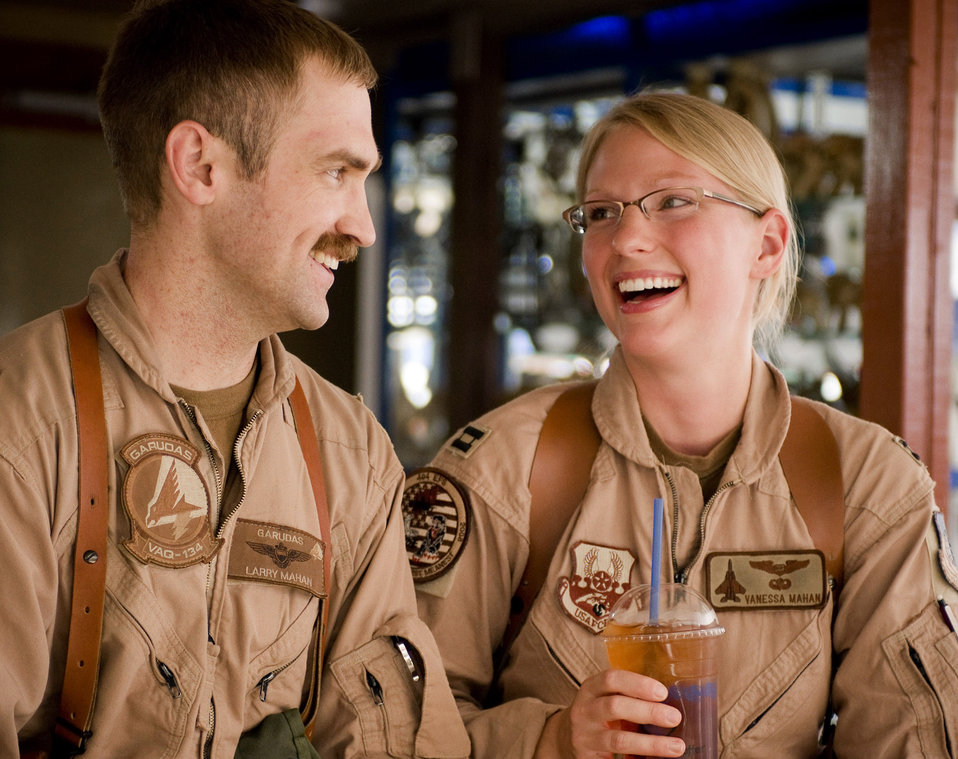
Military couple spends first anniversary in unlikely place

Navy Lt. Larry Mahan and his wife, Capt. Vanessa Mahan, celebrate their first anniversary with iced tea Sept. 1 at Bagram Air Field, Afghanistan. The couple celebrated together with the help of the Captain Mahans's home unit, the 335th Fighter Squadron from Seymour Johnson Air Force Base, N.C., and the 455th Air Expeditionary Wing here. Captain Mahan is an F-15E Strike Eagle weapons systems officer from St. John, Ind.